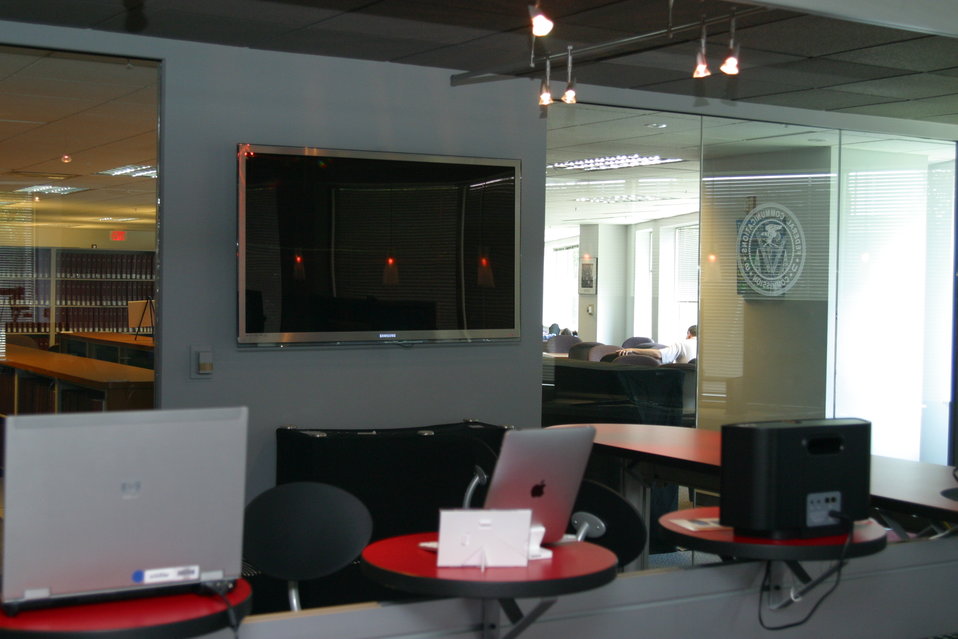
TEC Center

Debuting the FCC TEC Center on Wednesday July 13, 2011